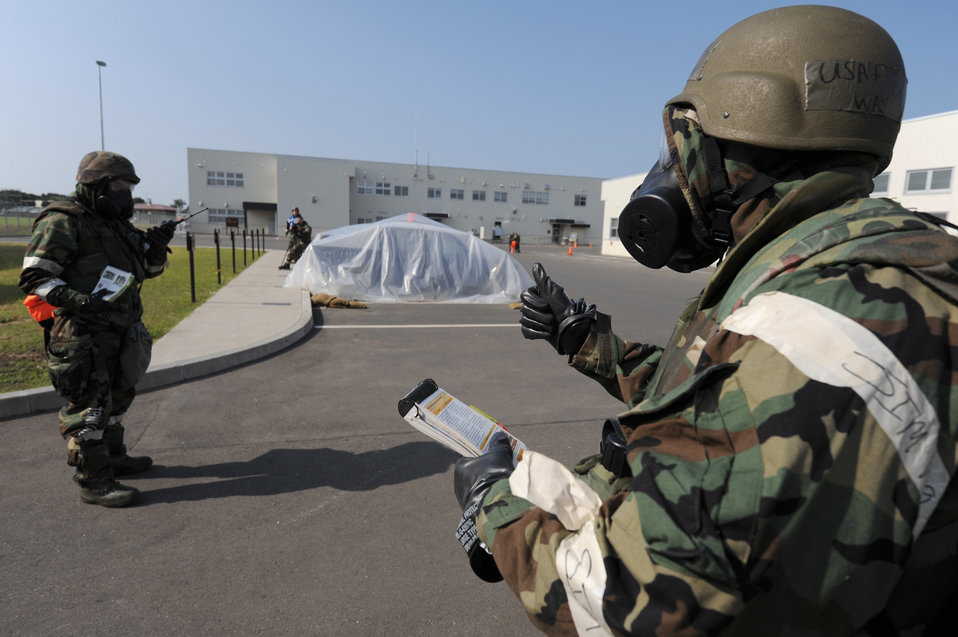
Simulated attack training exercise

Senior Airman David Washington (right) and Airman 1st Class Eric Jones perform post-attack reconnaissance actions June 20, 2011, during a training exercise at Misawa Air Base, Japan. Both Airmen are assigned to 35th Civil Engineer Squadron.